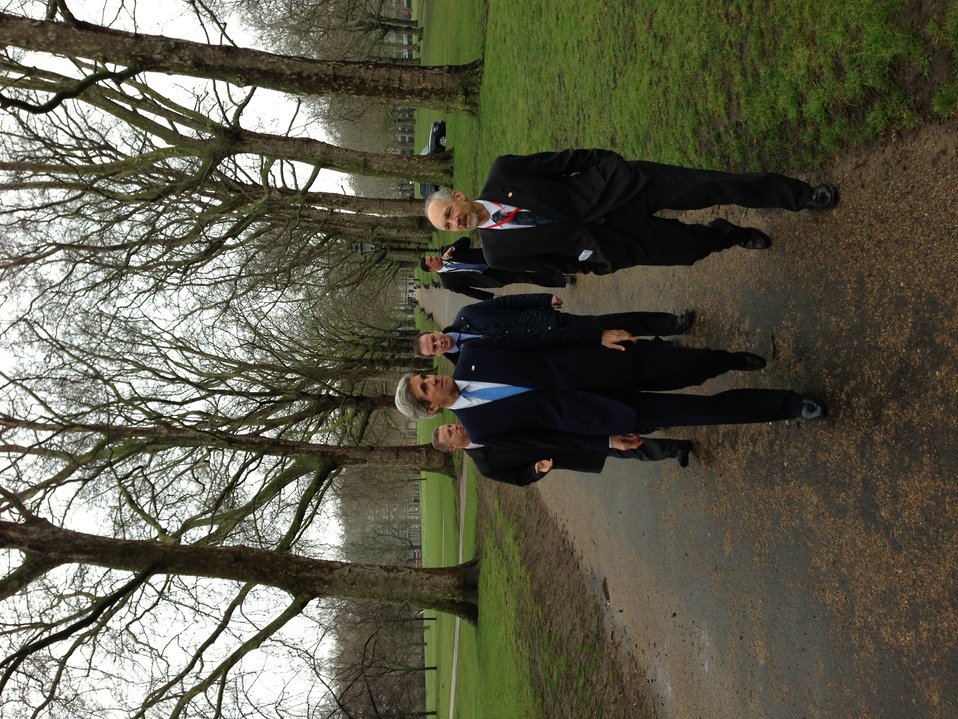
Secretary Kerry walks in Green Park with Deputy Chief of Staff William Danvers

U.S. Secretary of State John Kerry walks in Green Park with Deputy Chief of Staff William Danvers during a break in the G8 ministerial meetings in London, United Kingdom, April 11, 2013.